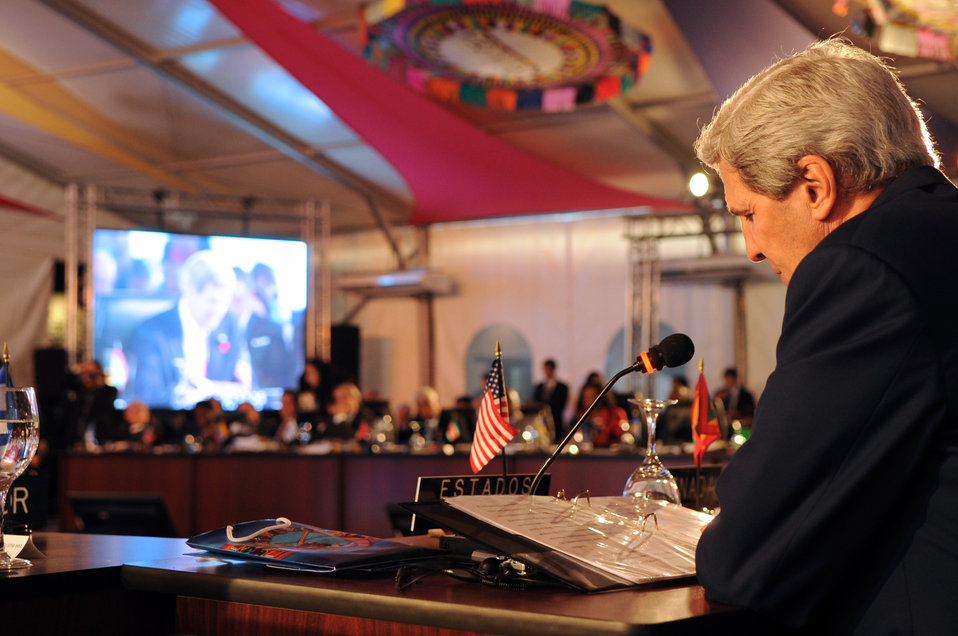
Secretary Kerry Addresses the OAS General Assembly Plenary Session

U.S. Secretary of State John Kerry addresses the General Assembly of the Organization of American States Plenary Session in Antigua, Guatemala, on June 5, 2013.